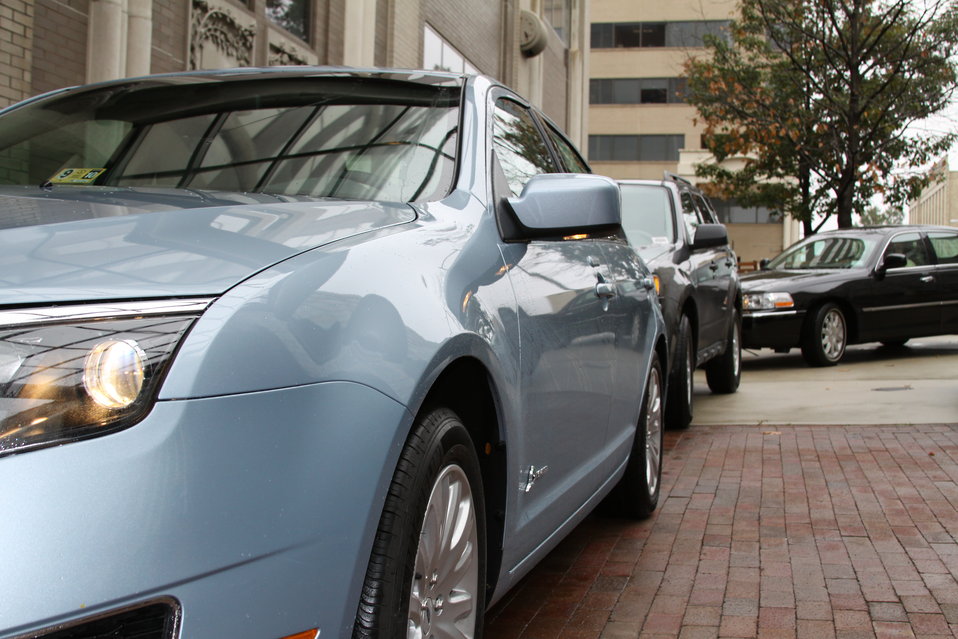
FCC Official Vehicle Tour